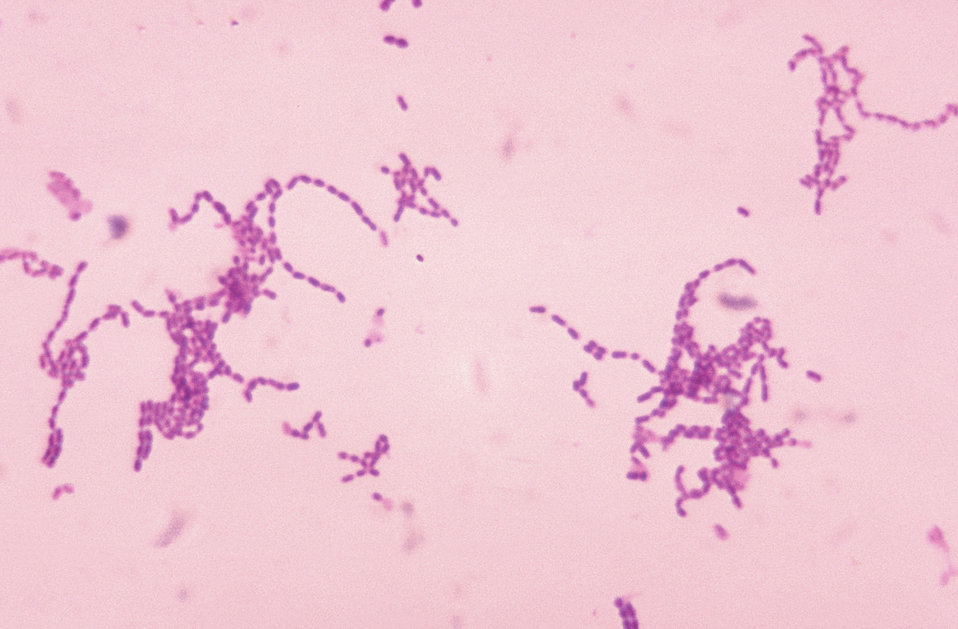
This micrograph depicts gram-positive Peptostreptococcus spp. bacteria, which are known to grow in chain formations.